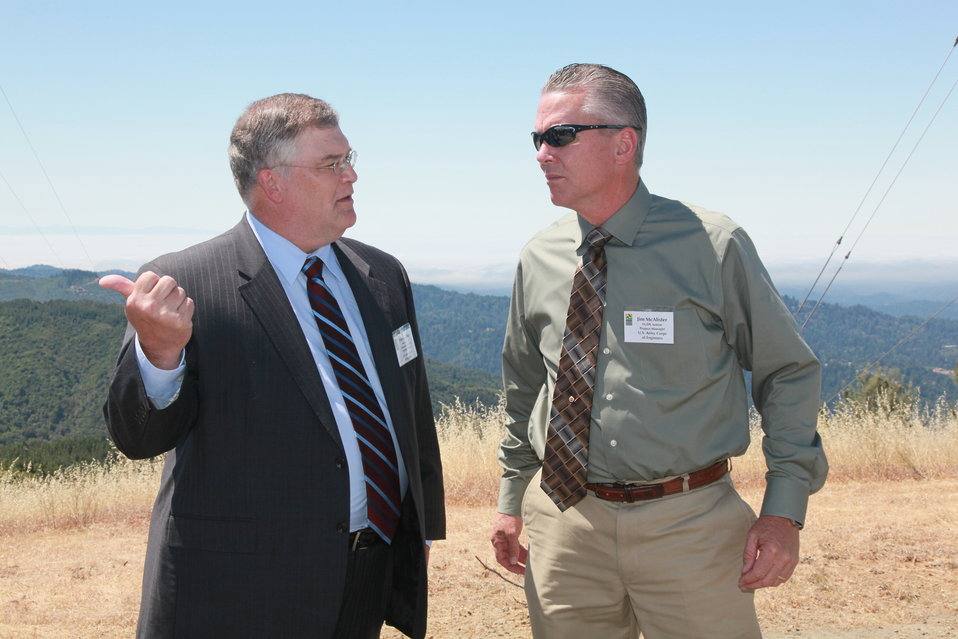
SACRAMENTO,Calif. (July 9,2010)-- Project managers discuss some of the technical details of the project up on Mount Umunhum.